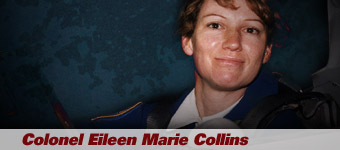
Col. Eileen Collins

Col. Eileen M. Collins, first woman space shuttle commander.